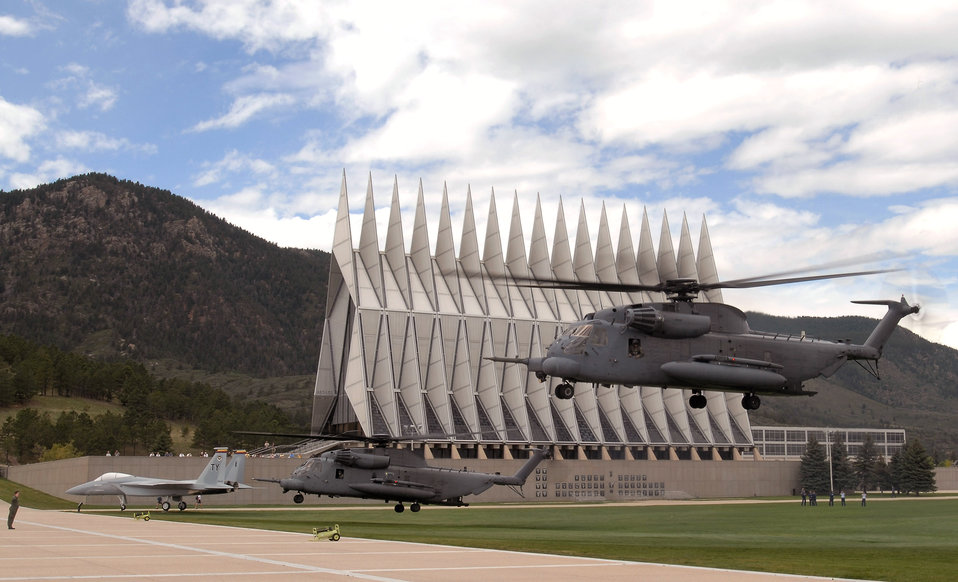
Cadets say good-bye

Two MH-53 Pave Lows take off from the U.S. Air Force Academy Terrazzo in Colorado Sept. 10 after a two-hour stint as a static display. The stopover allowed many people to get a closer look at the Hurlburt Field, Fla., helicopters that were on their way to retirement at Davis-Monthan Air Force Base, Ariz.